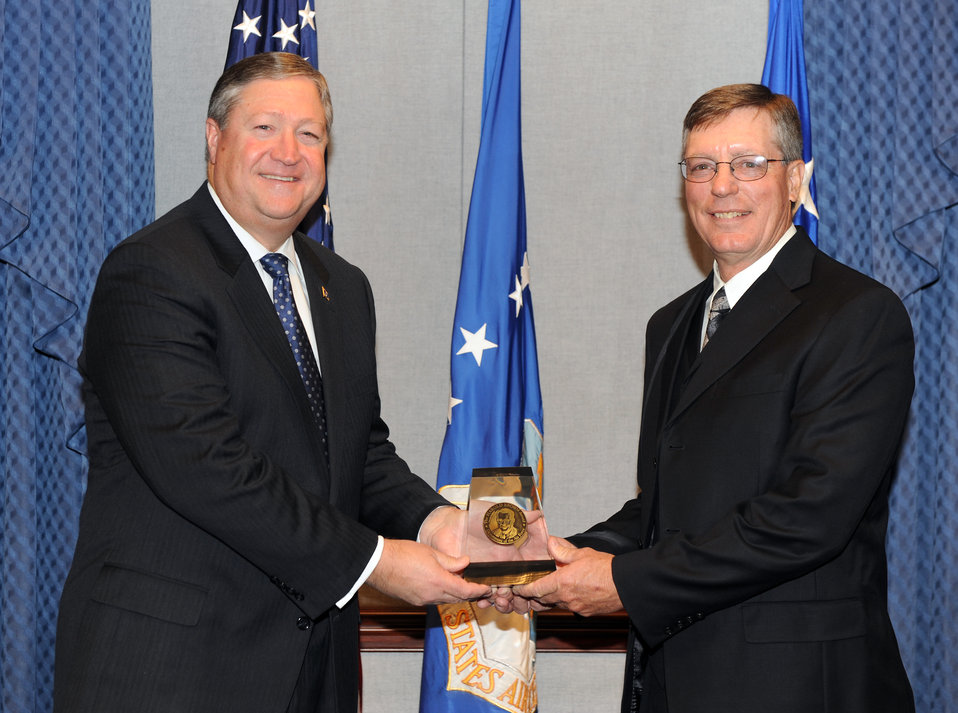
Holloman scientist receives Harold Brown Award

Secretary of the Air Force Michael Donley presents the 2011 Harold Brown Award to Dr. Michael Hooser during a ceremony at the Pentagon, Washington, D.C., Dec. 12, 2011. The Harold Brown Award recognizes significant achievement in research and development that led to or demonstrated promise of a substantial improvement in operational effectiveness of the Air Force.